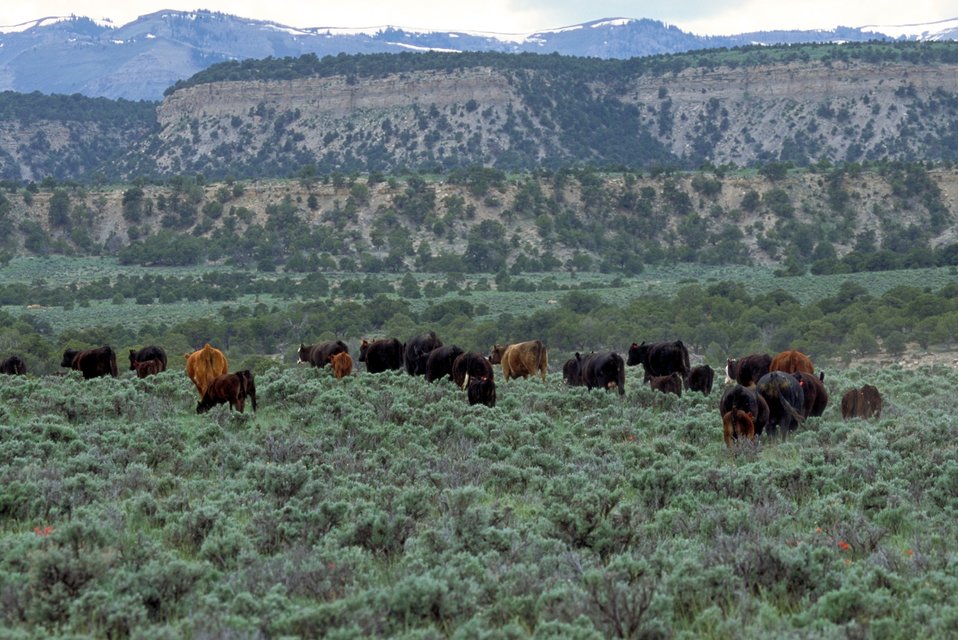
Livestock grazing on BLM lands near Price, Utah.